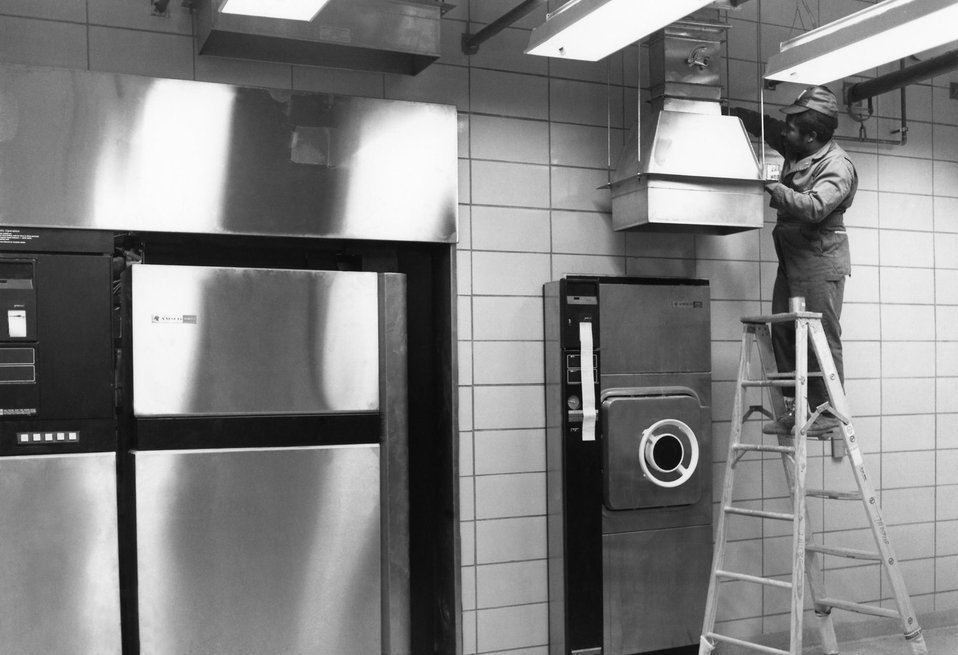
This photograph, taken in the mid 1980s, showed a Centers for Disease Control maintenance worker as he was installing part of the ventilation system in what at that time was the organization's newest virology laboratory located on the CDC's Clifton Road, Roybal Campus in Atlanta, Georgia.